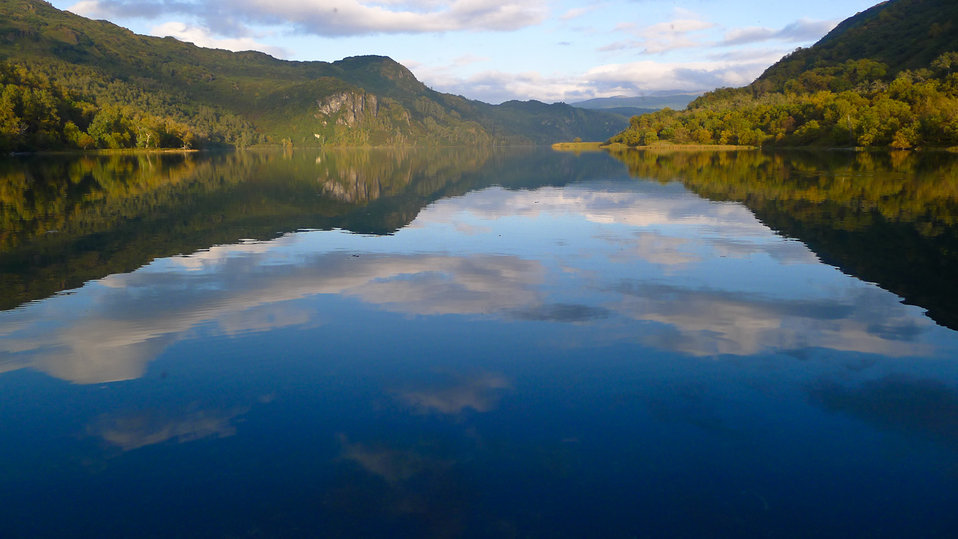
Calm on the lake

Lisa Hupp/USFWS
Source: Kodiak NWR
Uganik Lake